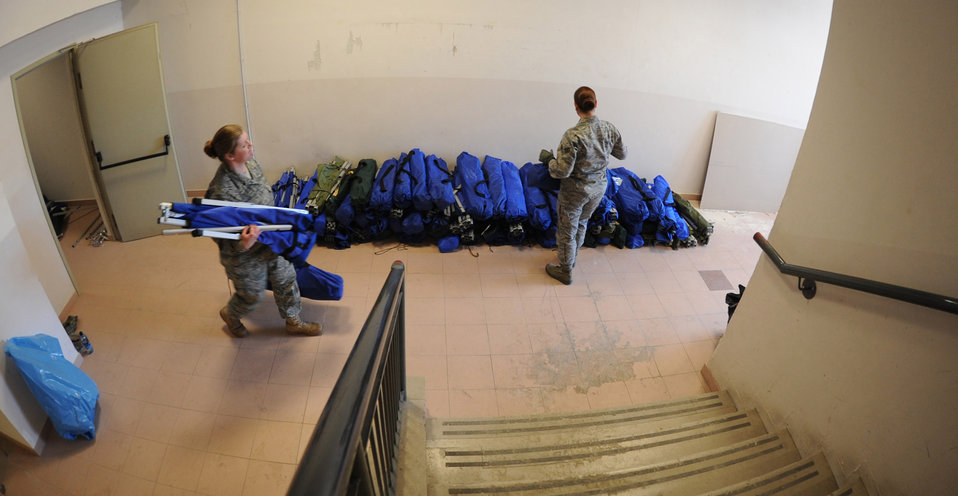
Odyessey Dawn

Airmen from the 31st Force Support Squadron, move cots out of a storage room for incoming personnel arriving at Aviano Air Base, Italy, in support of Operation Odyssey Dawn March 20. Joint Task Force Odyssey Dawn is the U.S. Africa Command task force established to support the larger international response to the unrest in Libya. A broad coalition of nations are partnering to enforce U.N. Security Council Resolution (UNSCR) 1973, which authorizes all necessary means to protect civilians in Libya under threat of attack by Qadhafi regime forces. JTF Odyssey Dawn is commanded by Admiral Samuel J. Locklear, III.